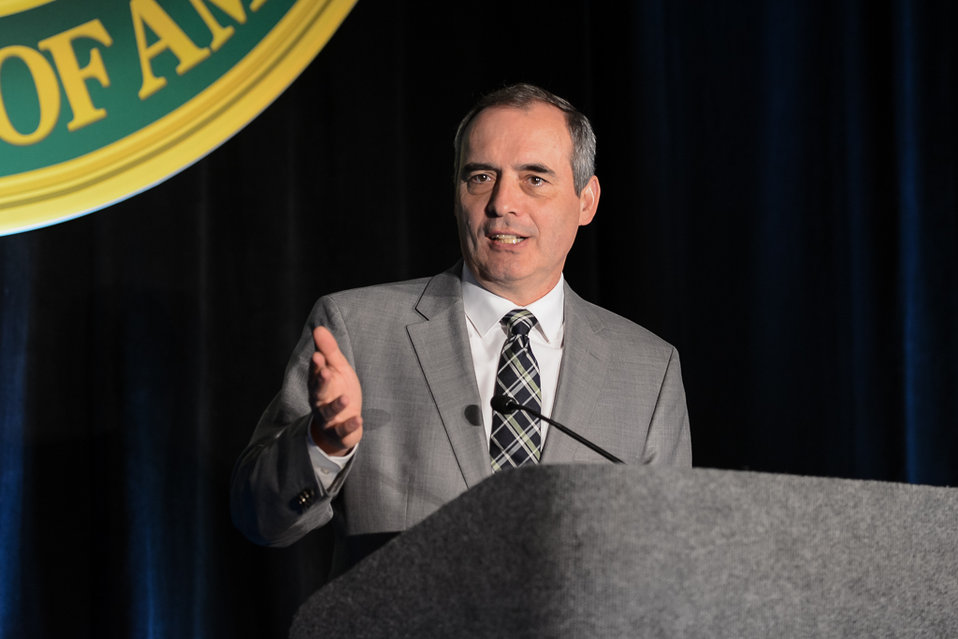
OSDBU Conf 6